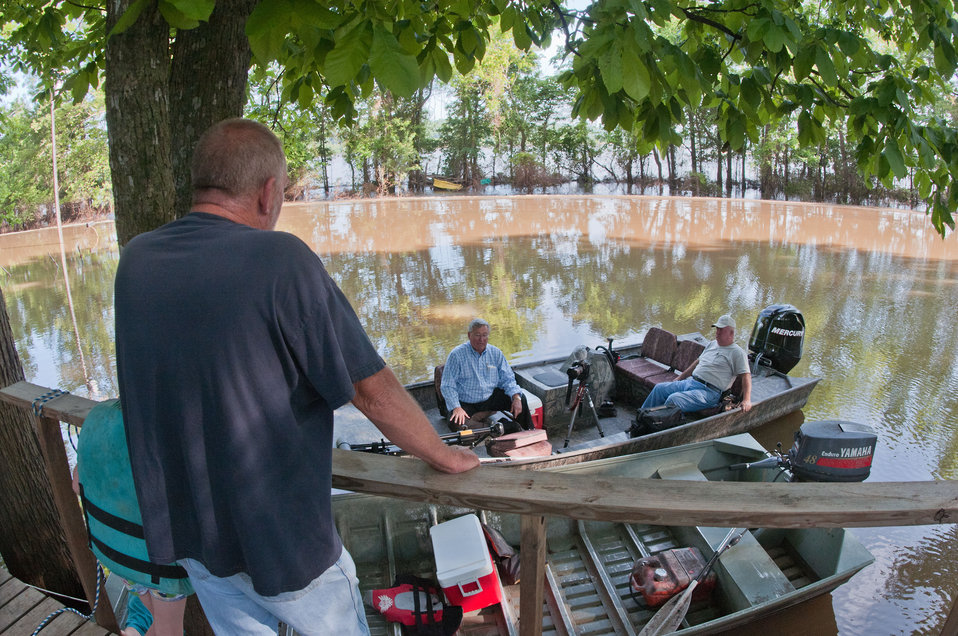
While conducting a boat tour of the flood water of Lauderdale County, Mayor Rod Schuh (long sleeve blue shirt) checks in on Robert (blue t-shirt) and Brenda Moffatt and their grand daughters Lindsey (10, yellow life jacket) and Katlyn (9). During the visit, on Saturday, May 21, 2011, Mayor Schuh learned that the Moffatts do not have flood insurance, and that their intended repairs will out of their own pocket. Schuh also asked, if they would accept assistance. Flood waters came as high as Mr. Moffatt's elbow.